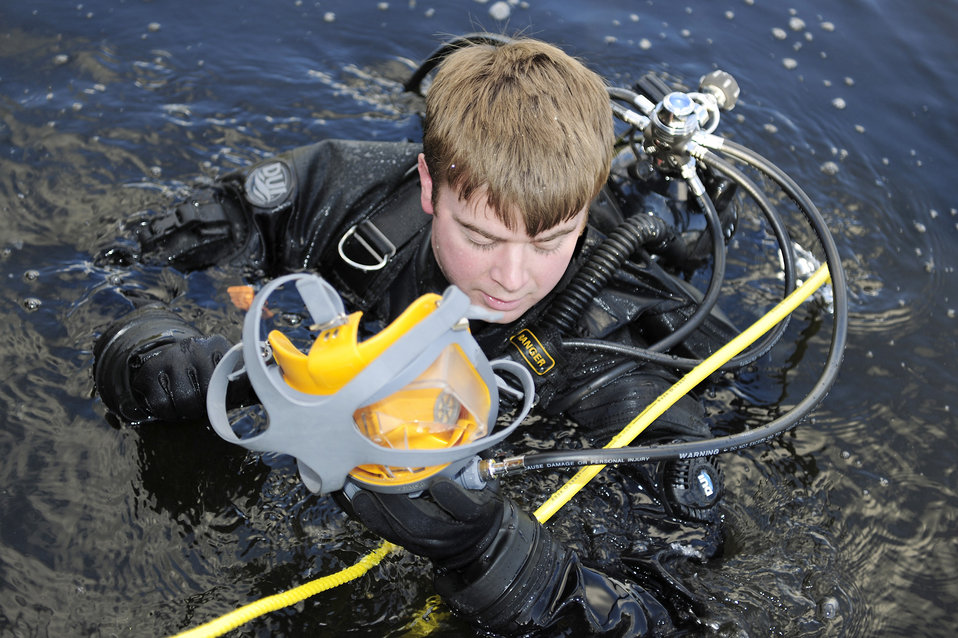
Subsurface recovery exercise

Senior Airman Mahonri Gibson prepares to don a full-faced scuba mask during a subsurface search and recovery exercise Oct. 20, 2010, at Stanford Training Area, England. Airman Gibson is a pararescueman with the 56th Rescue Squadron. He is equipped with recovery dive equipment which includes a buoyancy compensator, a primary air source, a secondary emergency air source, a cold water regulator system and an exposure dry suit.